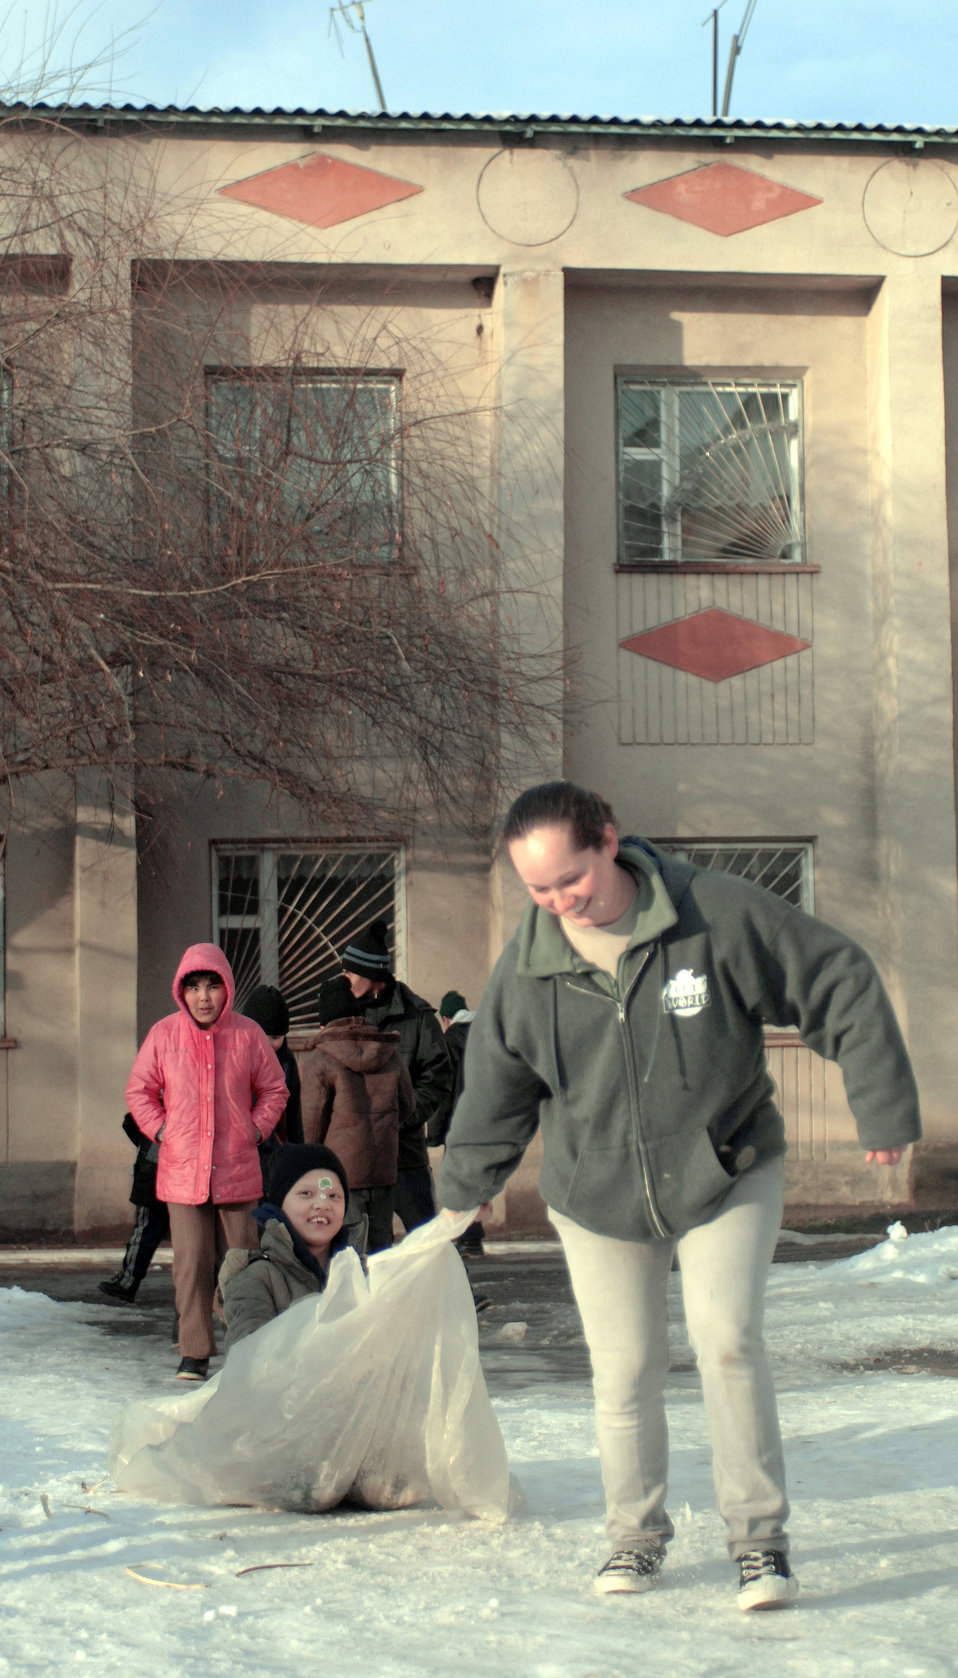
Manas Airmen make memorable bonds with Kyrgyz children

Airman 1st Class Jennifer Morrell gives a boy a ride on a makeshift sled Jan. 11 at the Belovodosky orphanage north of Bishkek, Kyrgyzstan. Airmen from nearby Manas Air Base visit the orphanage frequently to share friendship and donate toys as well as clothing, blankets, diapers and toiletries. Airman Morrell is deployed with the 376th Expeditionary Aircraft Maintenance Squadron.